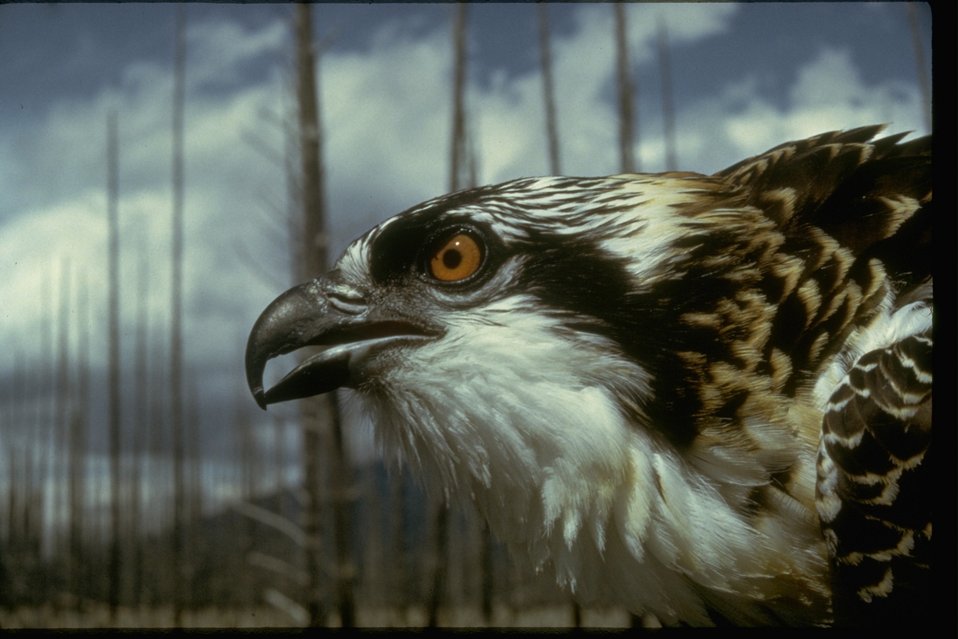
Side view close up of a Hawk.